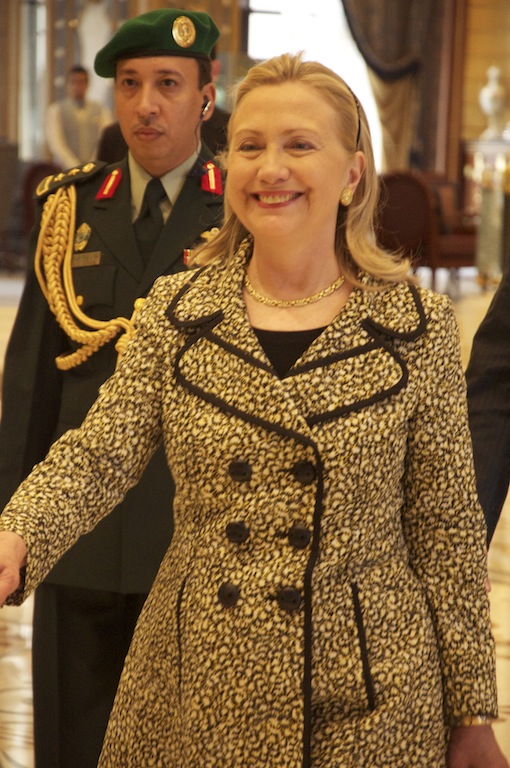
Secretary Clinton Enters the Palace

U.S. Secretary of State Hillary Rodham Clinton enters the palace of the Custodian of the Two Holy Mosques, King Abdullah, of Saudi Arabia, in Riyadh on March 30, 2012.